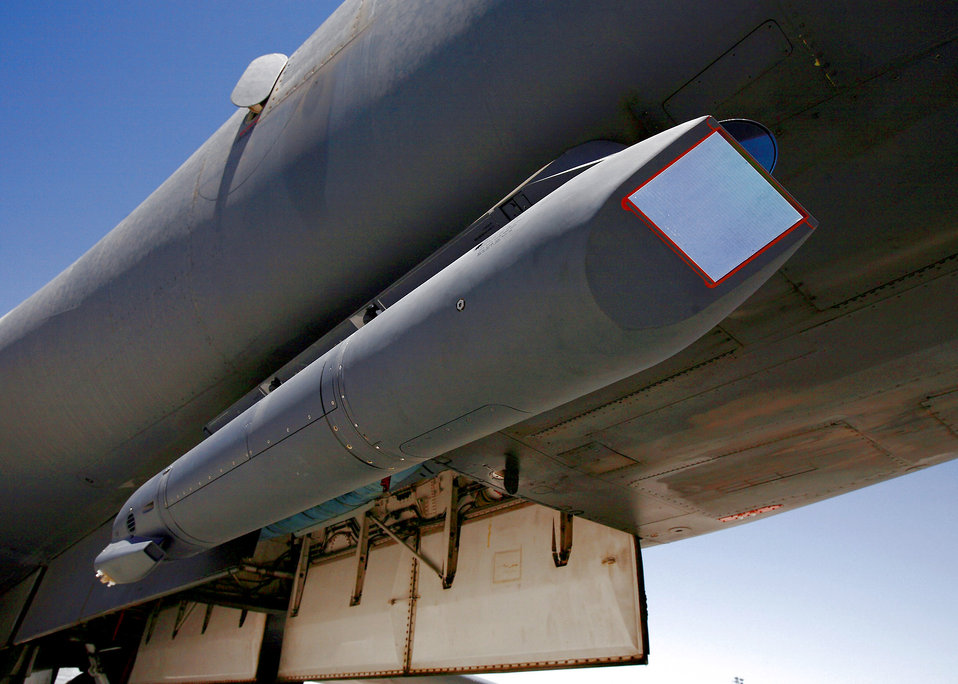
Tinker officials adapt sniper pod for B-1Bs

A sniper pod rests on the lower right of a B-1B Lancer fuselage. The sniper pod allows the aircrew to positively identify a target and quickly assess battle damage after an attack.